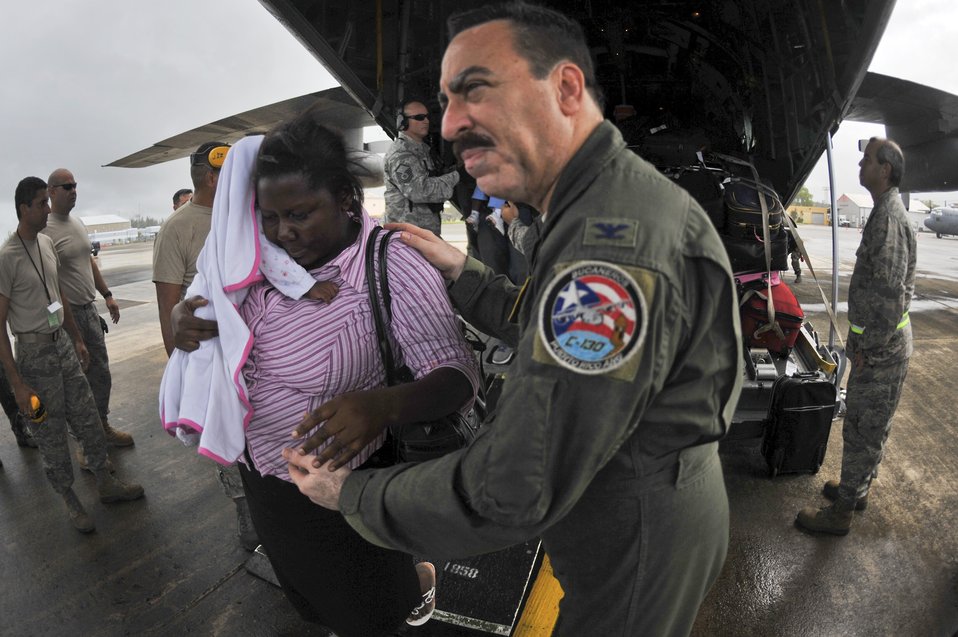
Haiti mission

Col. Carlos Quinones assists a U.S. citizen living in Haiti off of a C-130E Hercules aircraft Jan. 17, that landed in San Juan, P.R. Colonel Quinones is the 156th Wing Commander. Airmen from the Puerto Rico Air National Guard's 156th Airlift Wing are working around the clock in support of the relief effort in Haiti in the aftermath of a devastating earthquake.